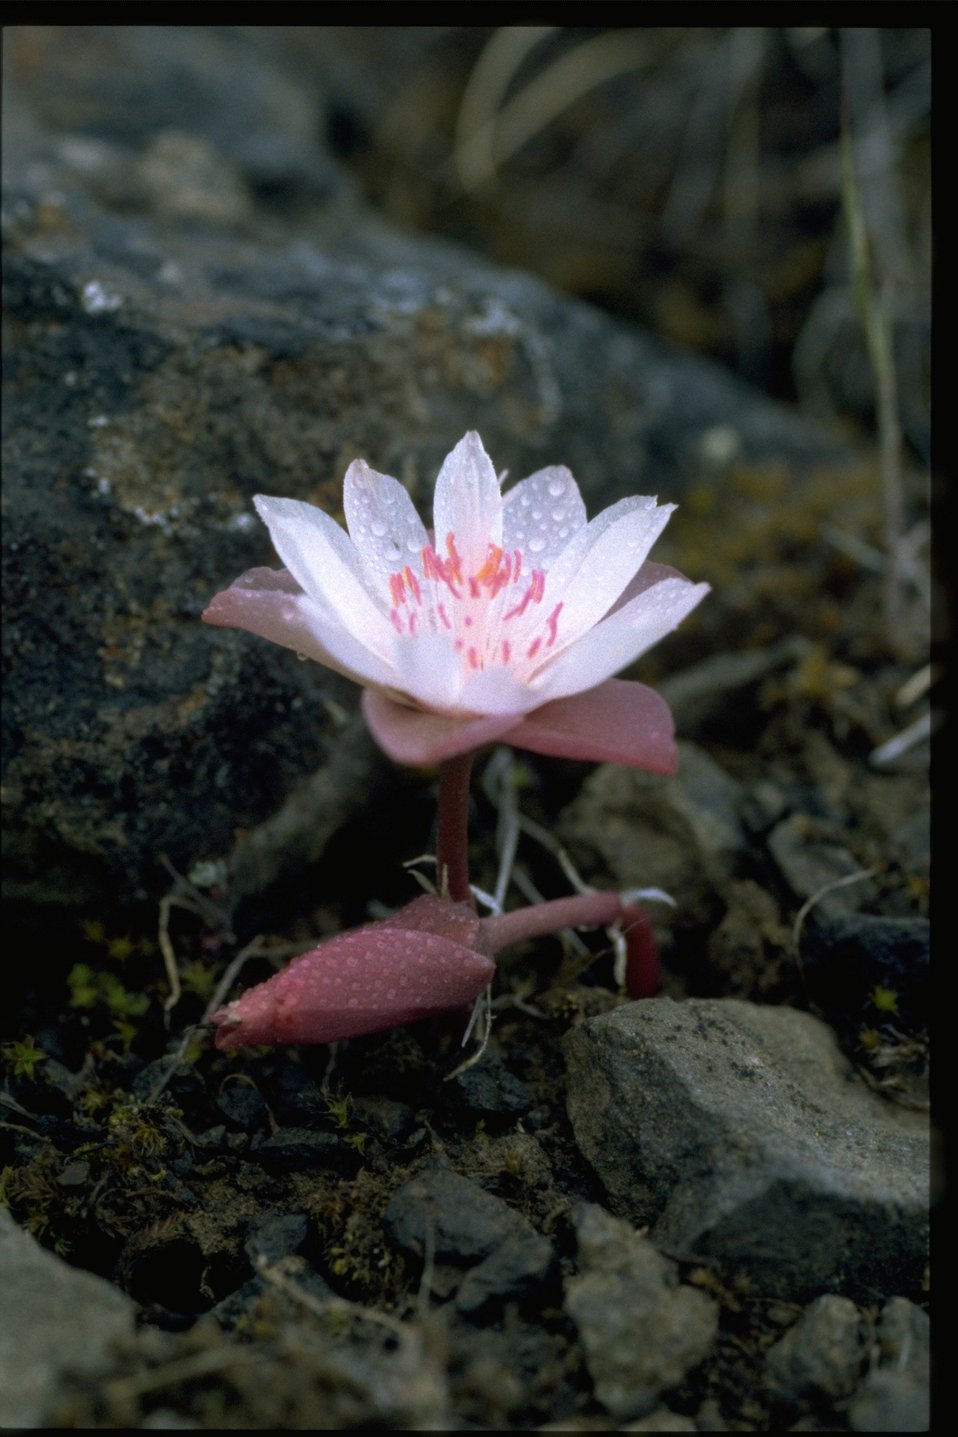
Medium shot of bitter root (Lewisia rediviva).